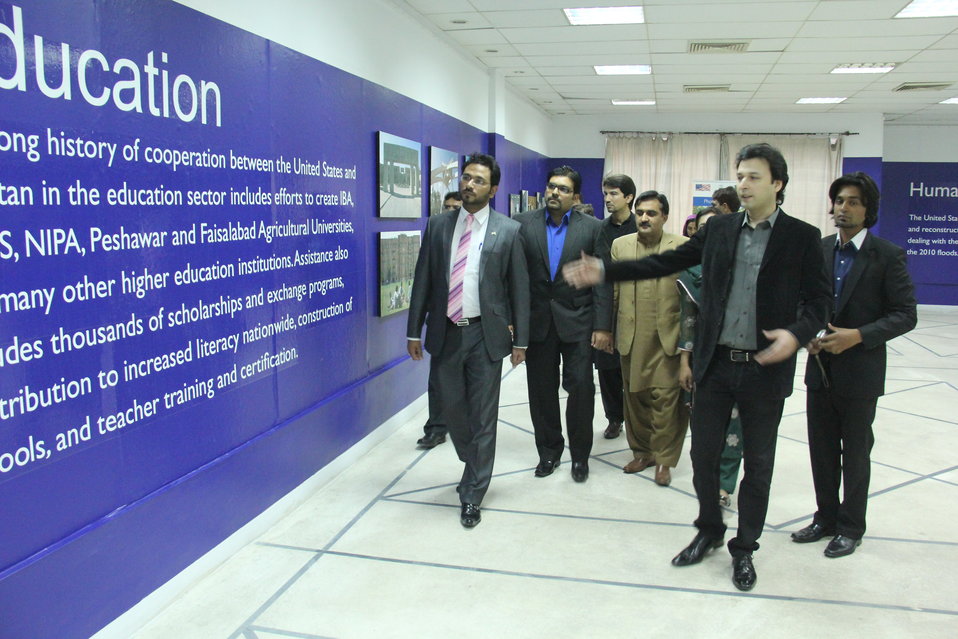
Multan, February 22, 2013 - USAID Senior Program Specialist Habib-ur-Rehman inaugurated a photo exhibition in Multan today to celebrate more than five decades of cooperation between the United States and Pakistan.